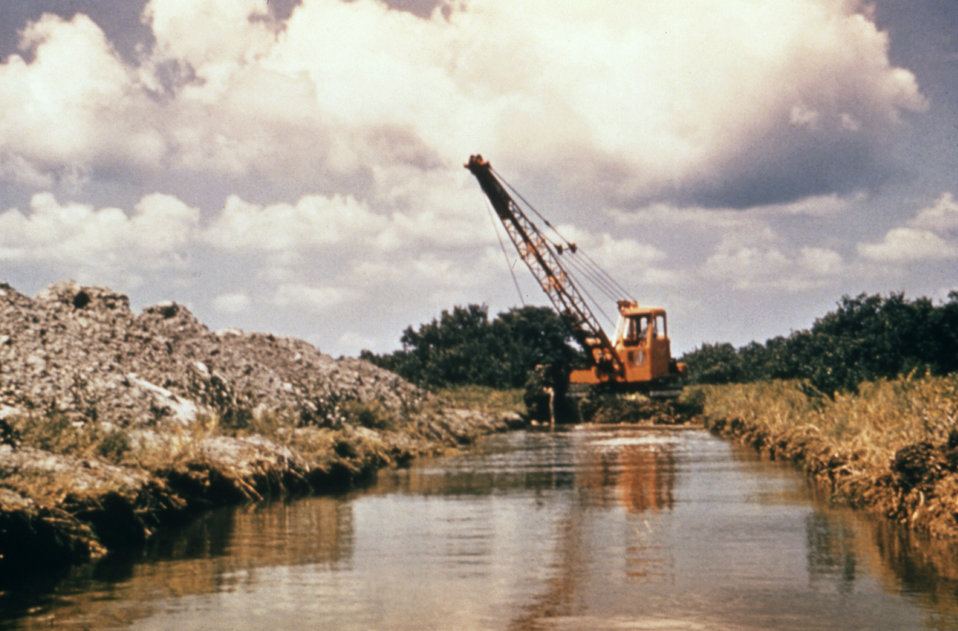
This 1976 photograph shows a dragline clearing debris from a drainage canal.